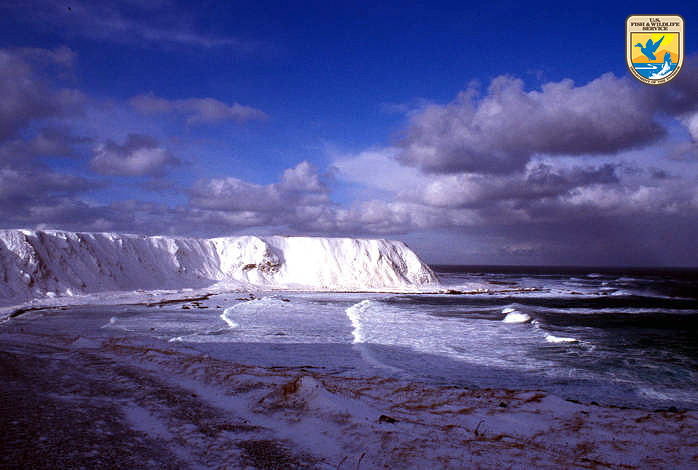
Shemya Island, Alaska